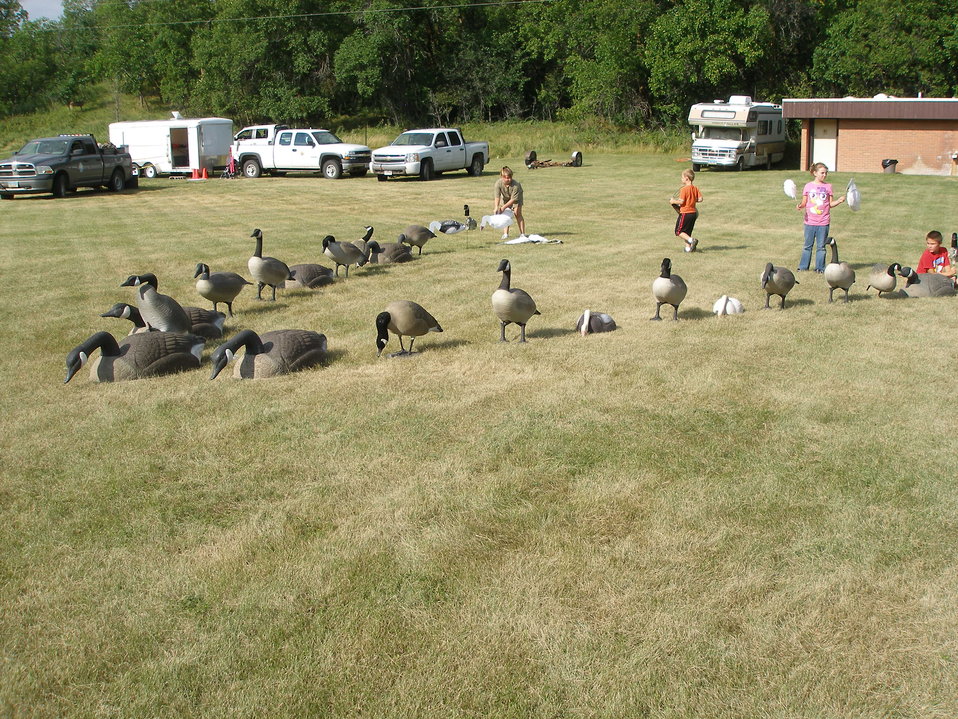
2011 Greenwing Day - Decoy Setup Session

Des Lacs National Wildlife Refuge, Tasker's Coulee

These Canada Geese look pretty realistic!